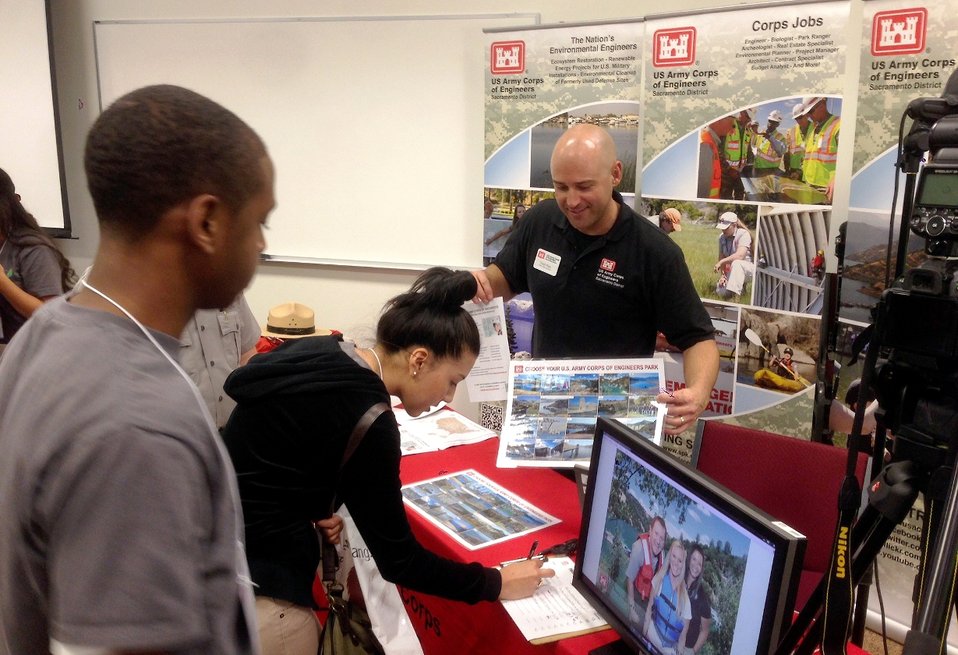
Explaining Corps opportunities at Outdoor Summit for Youth in Sacramento

Todd Plain, a public affairs specialist with the U.S. Army Corps of Engineers Sacramento District, explains environmental and natural resources job opportunities to local high school students at the Outdoor Summit for Youth in Sacramento, Calif., Oct. 30, 2013. The district hosted a booth at the event to encourage students to pursue careers in science, technology, engineering and mathematics, or STEM.